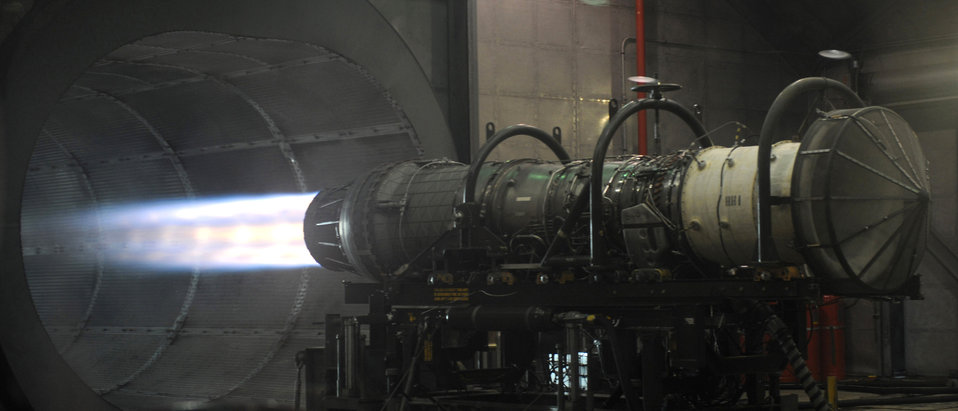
Engines running

The F100-220 engine runs in full augmentation at Seymour Johnson Air Force Base, N.C., May 21. The engine is used in the 4th Fighter Wing's F-15E Strike Eagles, the Air Force's all-weather, dual-role fighter jet.